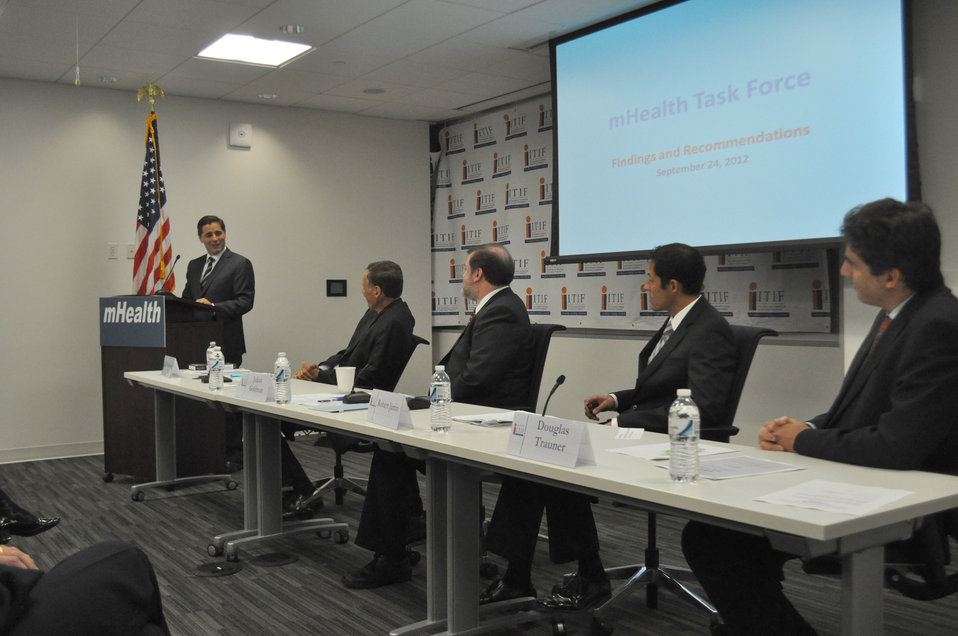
mHealth Task Force Findings and Recommendations Event - DSC 0664